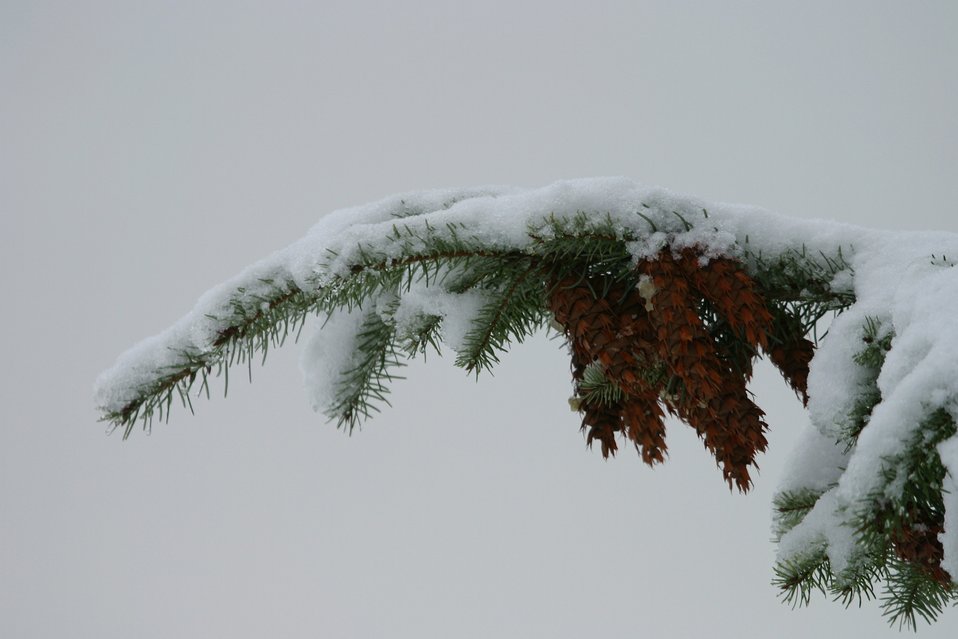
Snow and ice on Douglas Fir Bows and cones during the storm of January 2004.